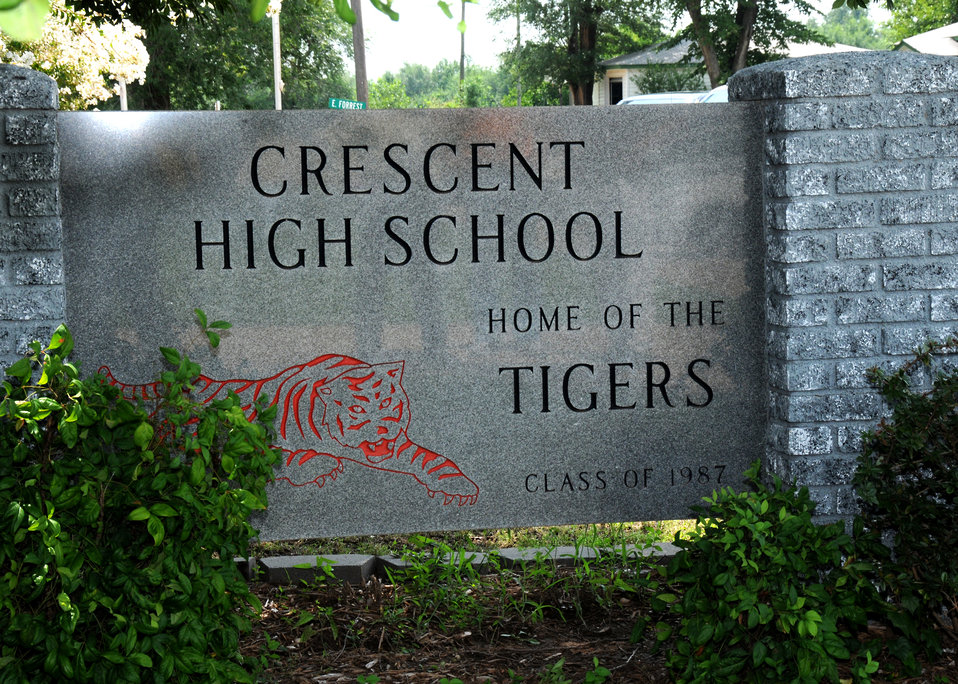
The sign for Crescent High School in Crescent, Oklahoma.